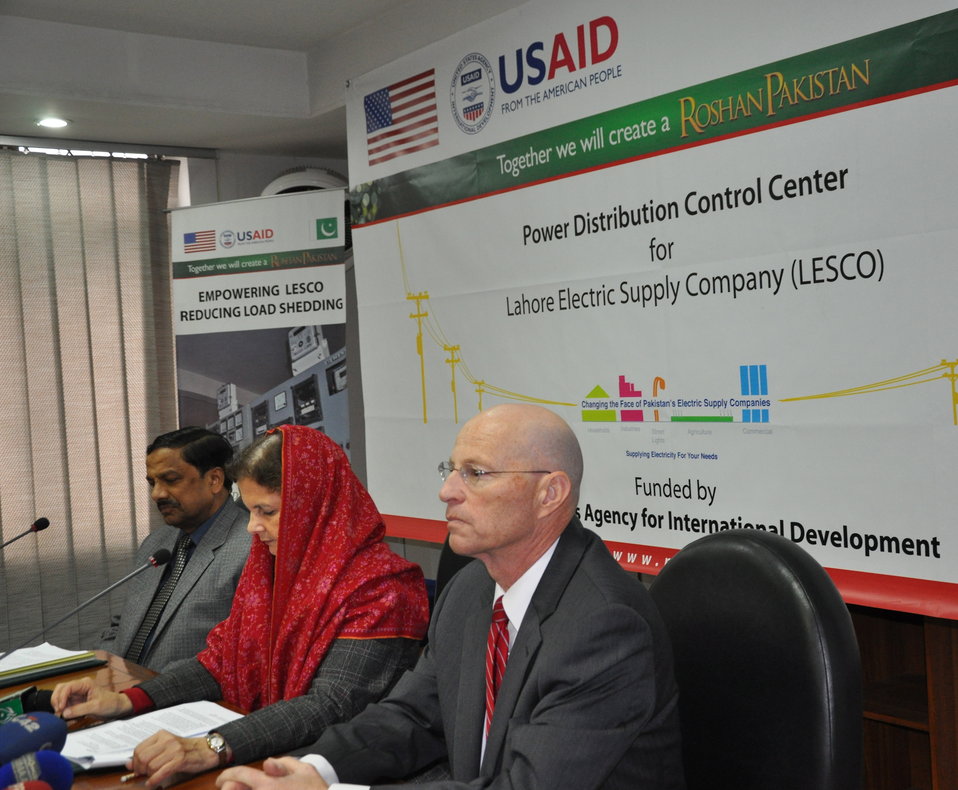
U.S. Improves LESCO’s Capacity to Reduce Load-Shedding

Lahore, February 6, 2014: Marking a milestone in U.S. support to Pakistan’s energy sector, U.S. Consul General Nina Maria Fite inaugurated the Power Distribution Control Center at the Lahore Electric Supply Company (LESCO). The LESCO center was established with support from the U.S. Agency for International Development (USAID) and will enable LESCO to monitor the flow of power through their grid stations. The new meters will verify actual power flow and reduce unplanned load-shedding.

“This project will provide real-time access to electricity load data to managers of Pakistan’s electricity grid and help LESCO overcome unscheduled load-shedding,” said Consul General Fite. “The U.S. Government and the American people are committed to assisting the Government of Pakistan to improve the power distribution system throughout Pakistan. We partner with power distribution companies to improve their operations, reduce losses, and ultimately make sure that the Pakistani people have a more reliable power supply.”

Unplanned load-shedding is one of the leading challenges in the country’s power crisis, costing Pakistan an estimated two percent of its Gross Domestic Product and 400,000 jobs in 2012. Load-shedding is a consequence of the imbalance between electricity generation and demand, and only increased generation will completely eliminate load-shedding. Unscheduled load-shedding, however, is the result of a lack of real-time energy consumption data and can be reduced by improved monitoring systems, such as the USAID project inaugurated at LESCO.

USAID’s five-year Power Distribution Program seeks to work jointly with government-owned DISCOs in Pakistan to improve their performance, reducing losses and improving revenues and customer services. Through this program and many others, the United States provides assistance to the Government of Pakistan in its efforts to reform the power sector and end the current energy shortfall.

More information about the Power Distribution Program can be found on the program’s website at pdip.pk